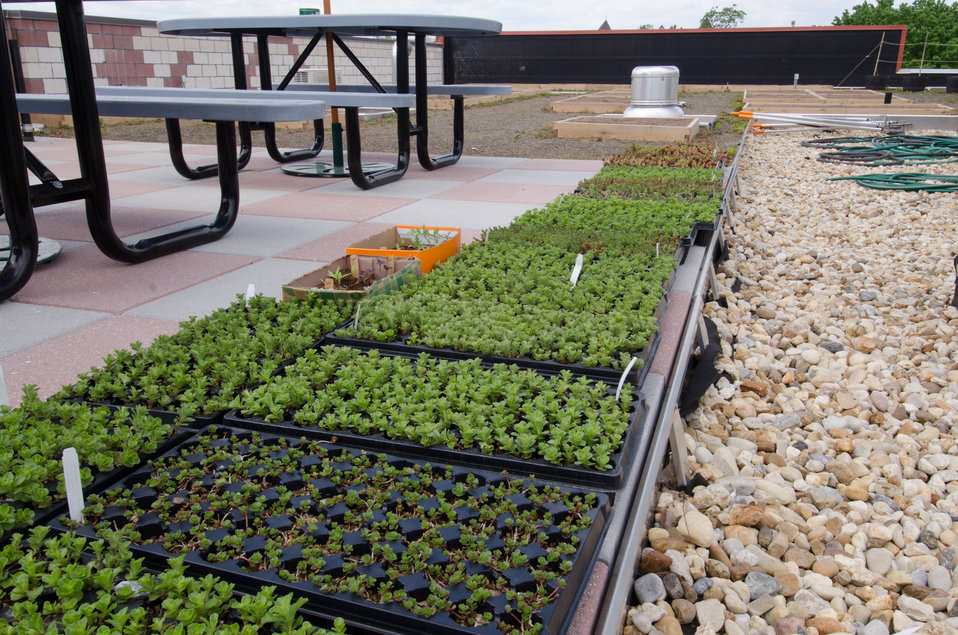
Rooftop vegetable garden is ready for planting at Bread for the City in Northwest Washington, DC, on Friday, April 29, 2011. The garden features specialized soil made of organic and inorganic material for rooftop gardens. The 30 wooden planters are about 4 inches tall but are not separate from the soil covering the roof, so there is a 10' depth to the plant in the boxes. Ground cover plants are already on site and await a team of volunteers to plant them in the walkways to retain moisture and help keep the soil temperature stable. This will be the largest of this kind in the Metro DC area. In addition to supplementing the fresh vegetable given to the community, it will also allow local residents to grown produce that is not normally marketed in this area.